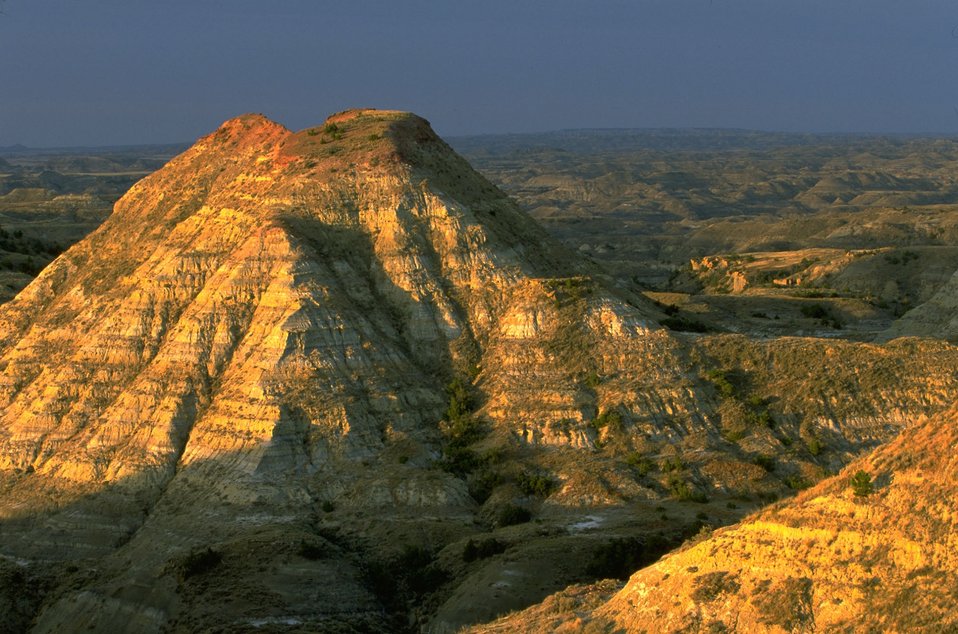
Golden hill in the Terry Badlands